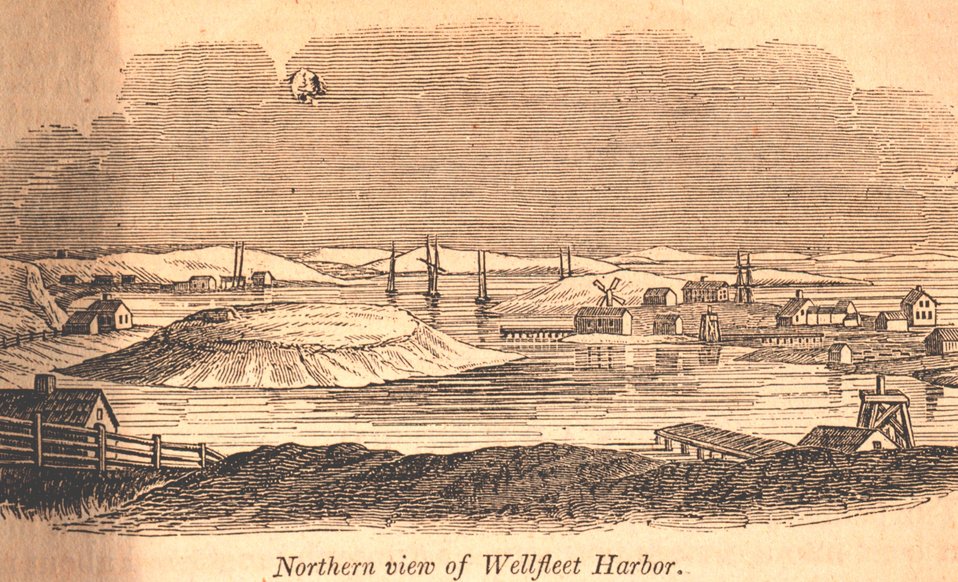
Wellfleet Harbor as seen from the north. Wellfleet is on Cape Cod. In: Historical Collections ... of Every Town in Massachusetts. 1841.